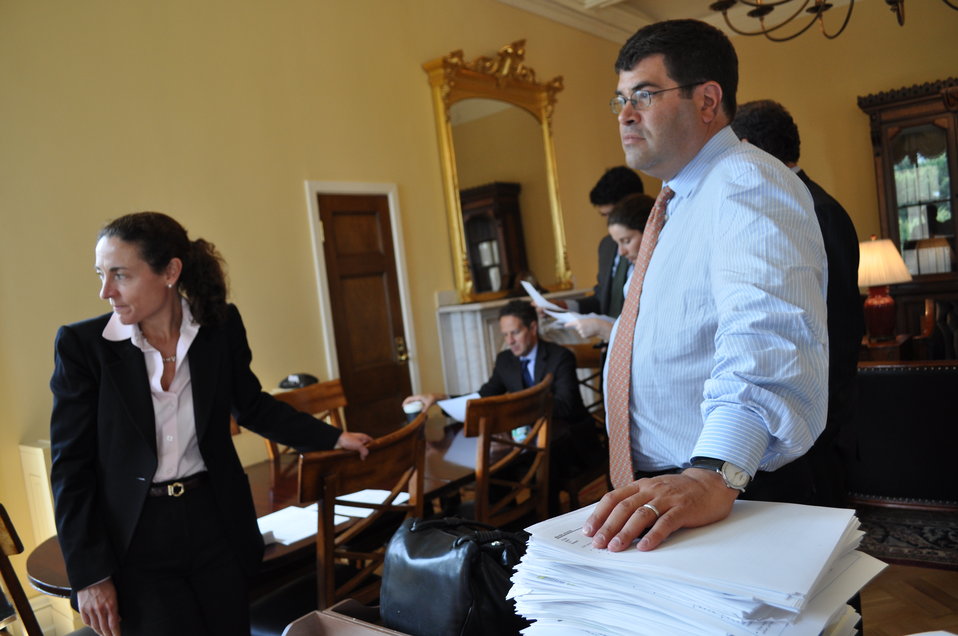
Passage of Financial Reform, 07/15/10

Deputy Director of the National Economic Council Diana Farrell and Deputy Treasury Secretary Neal Wolin gather with Secretary Geithner and staff to watch the Senate's vote on financial reform.